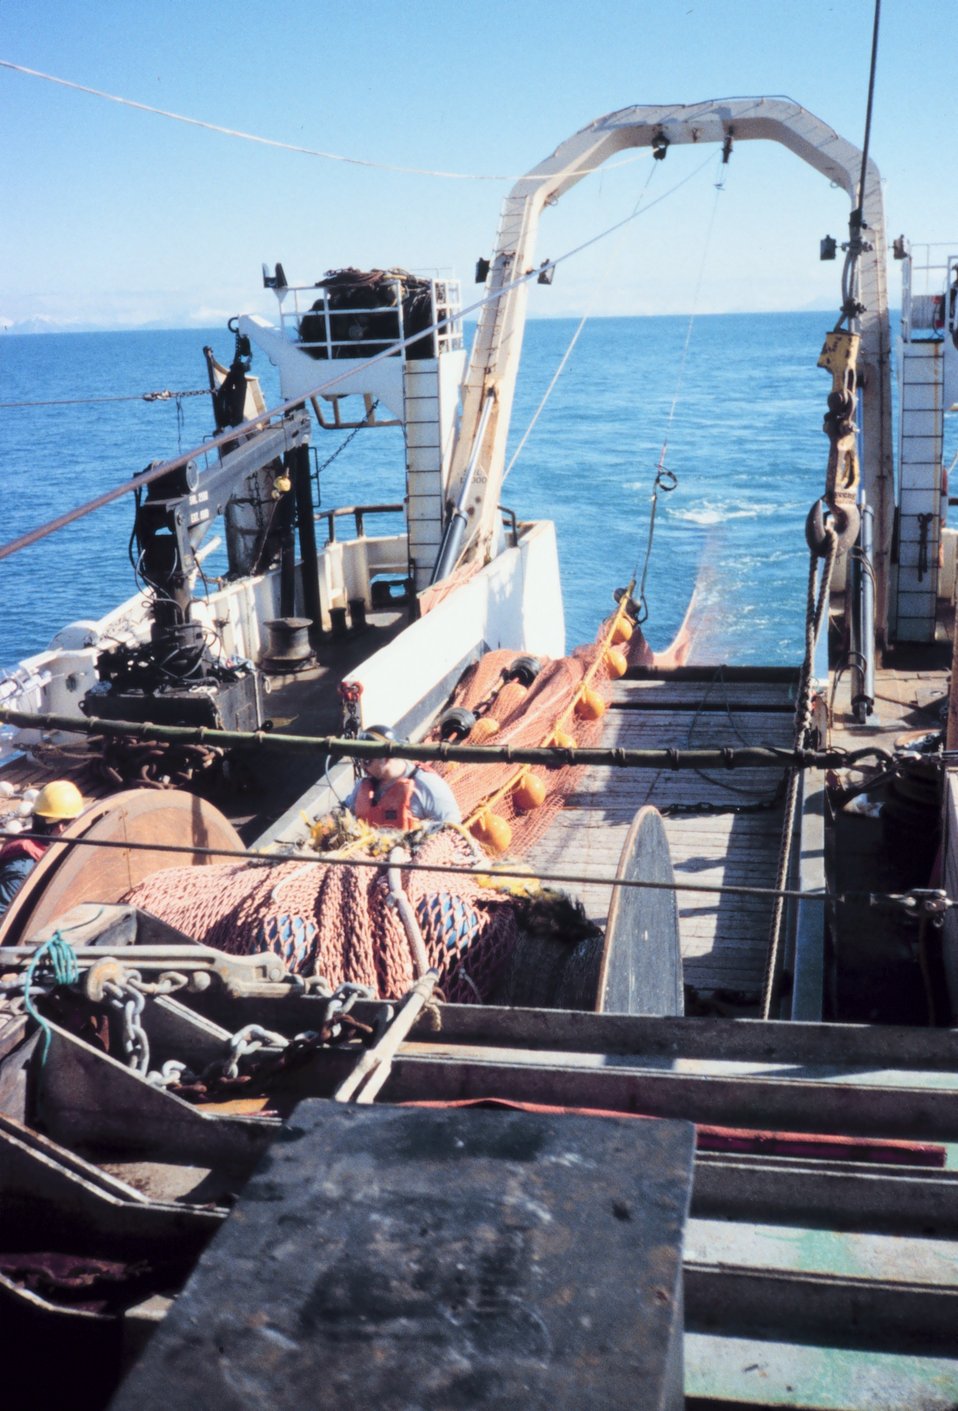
Photo # 2 - Streaming net during trawling operations. Yellow floats are pulled underwater but help keep the mouth of the net open while being towed.